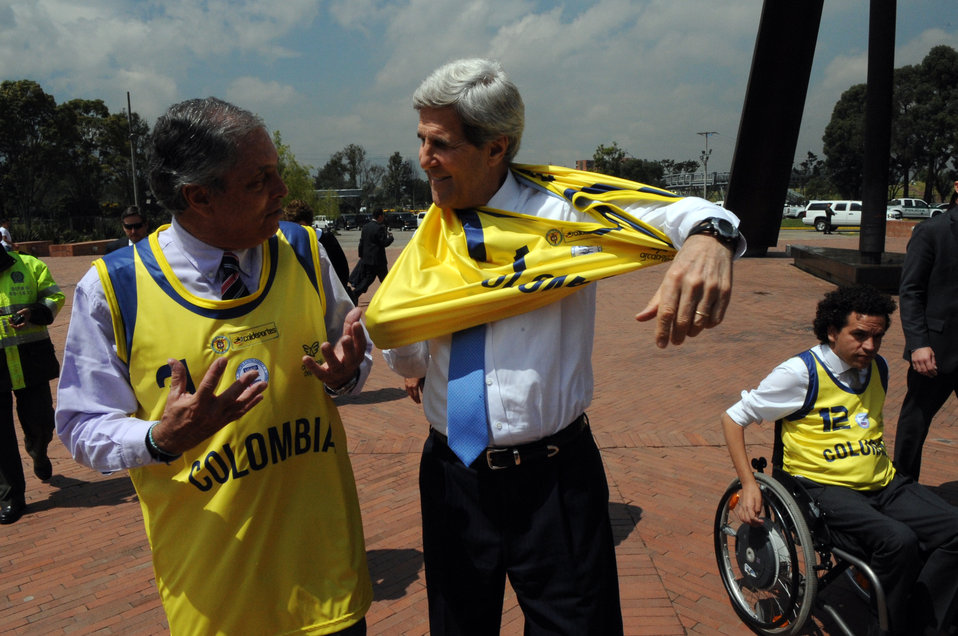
Secretary Kerry Dons the Jersey of the Colombian Wheelchair Rugby Team

U.S. Secretary of State John Kerry, joined by Andres Botero, Director of the Coldeportes Center in Colombia, pulls on a jersey before witnessing sports programs involving wounded law enforcement officers and veterans in Bogota, Colombia, on August 12, 2013.